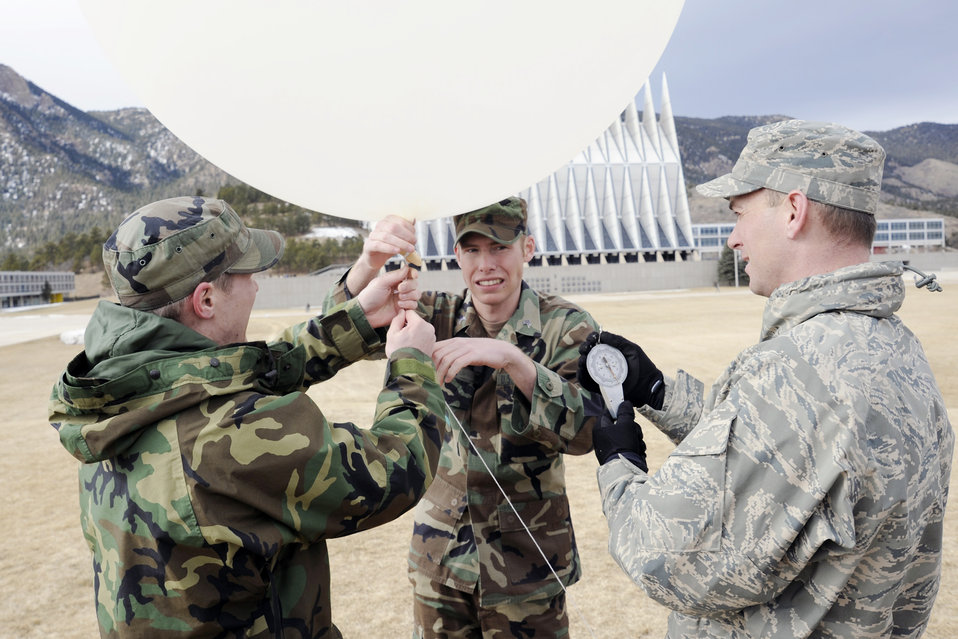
U.S. Air Force Academy, Colo-- Cadet 1st Class John Bowman and Cadet 2nd Class Taylor Olson affix the instrument package to the weather balloon as Capt Paul Homan prepares to measure the buoyancy of the balloon as part of the Meteorology 320 course, Introduction to Meteorology and Aviation Weather. This course teaches the fundamentals of meteorology with special emphasis placed on flight weather and its impact on aviation.